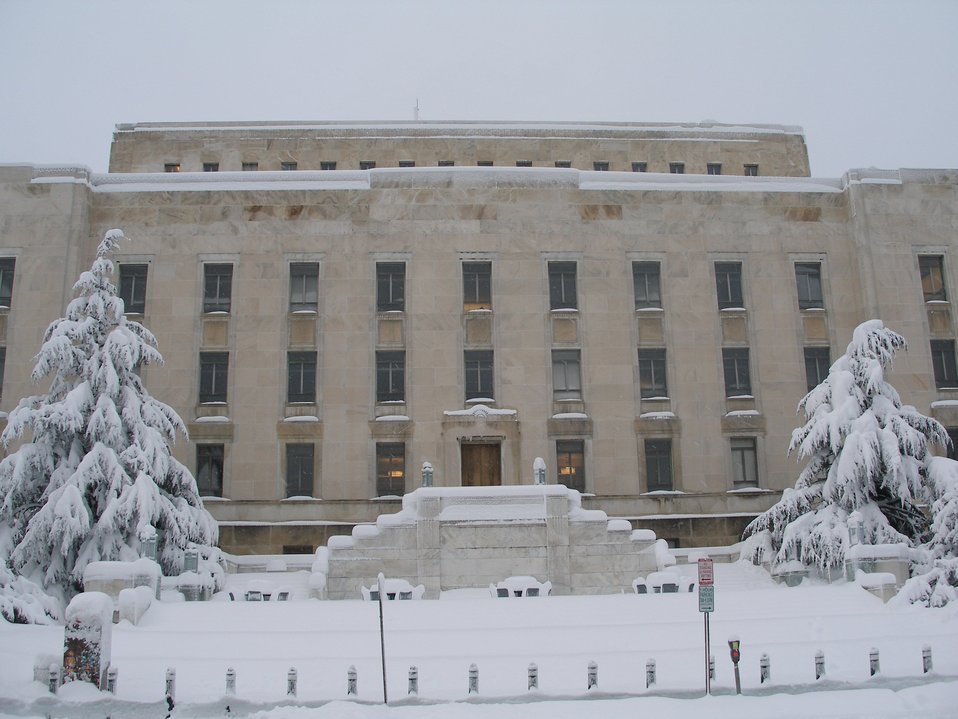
Adams Building of the Library Congress on the day following the February 5-6 snowstorm.